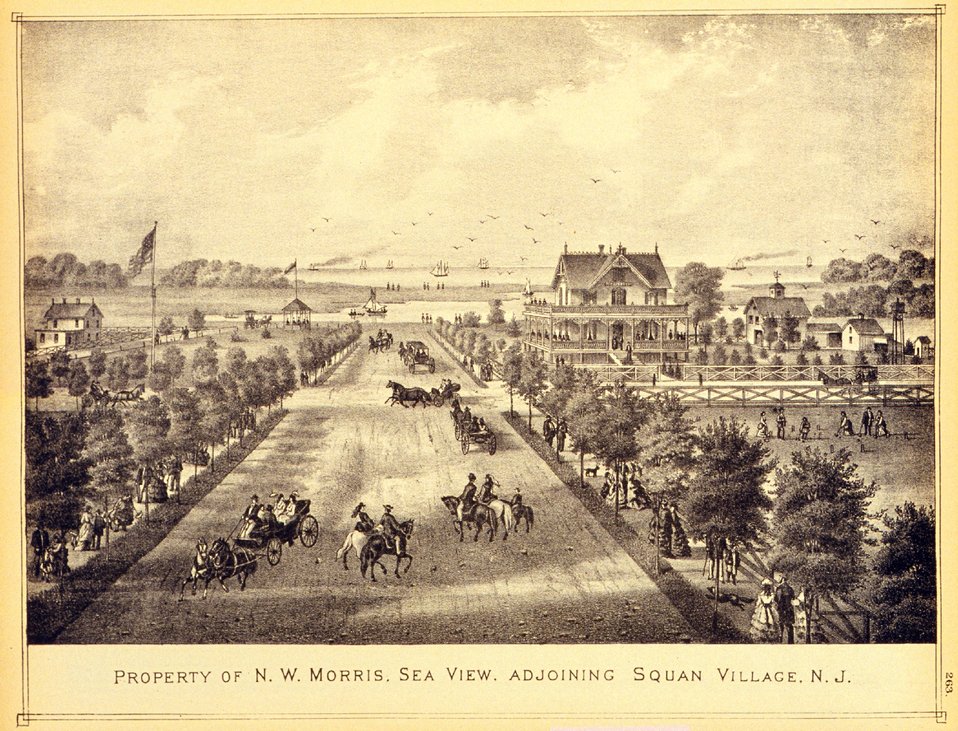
Property of N. W. Morris. Sea View, adjoining Squan Village, N.J. P. 263. 'Historical and Biographical Atlas of the New Jersey Coast,' by T. F. Rose, 1878.